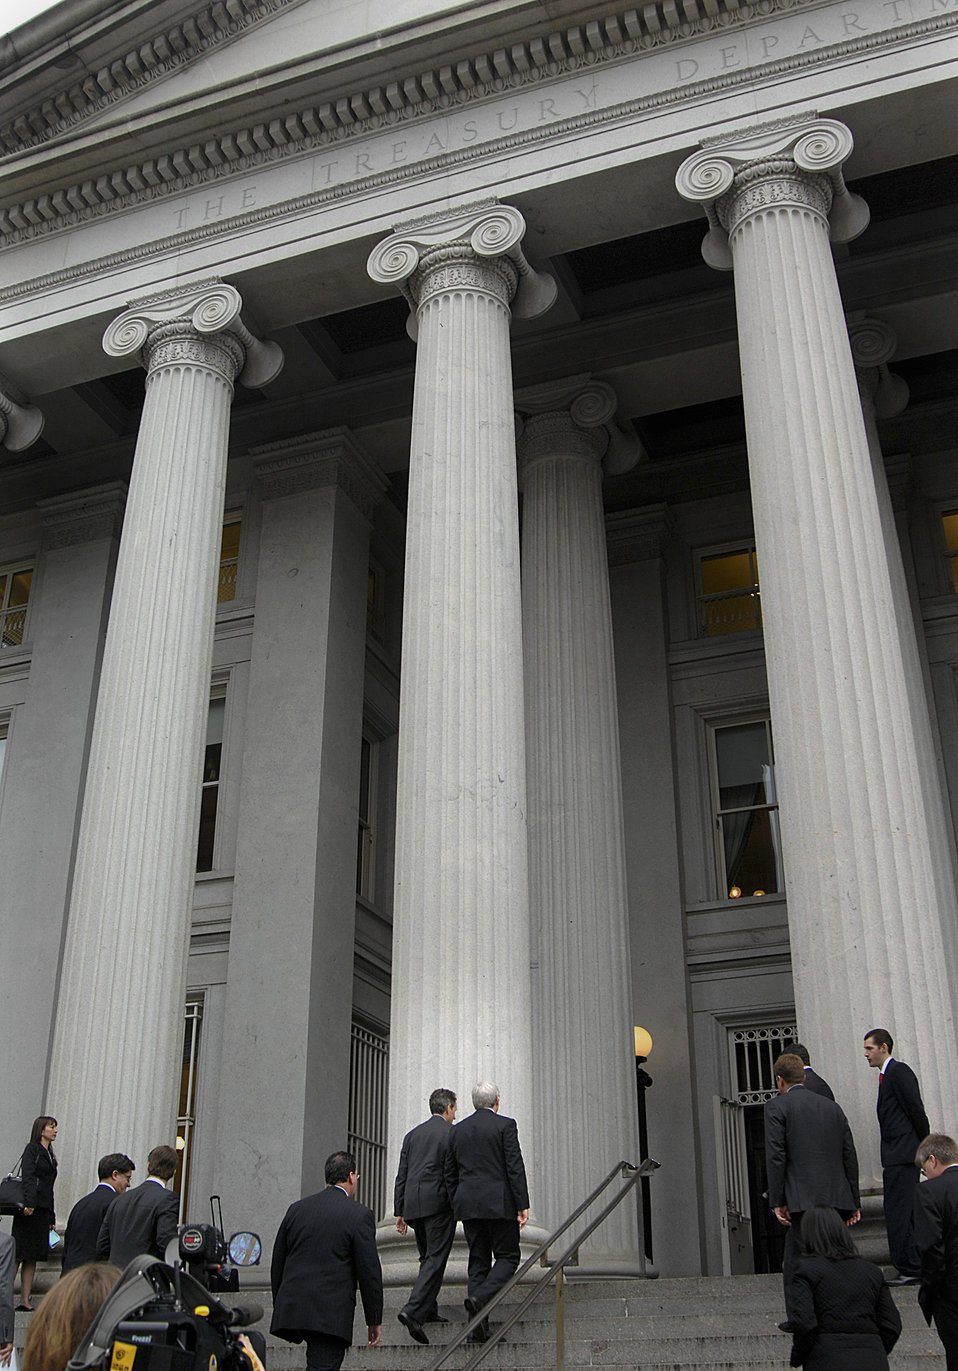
Australian Prime Minister Rudd

Australian Prime Minsiter Rudd and Secretary Geithner entering Treasury for a meeting on November 30, 2009.